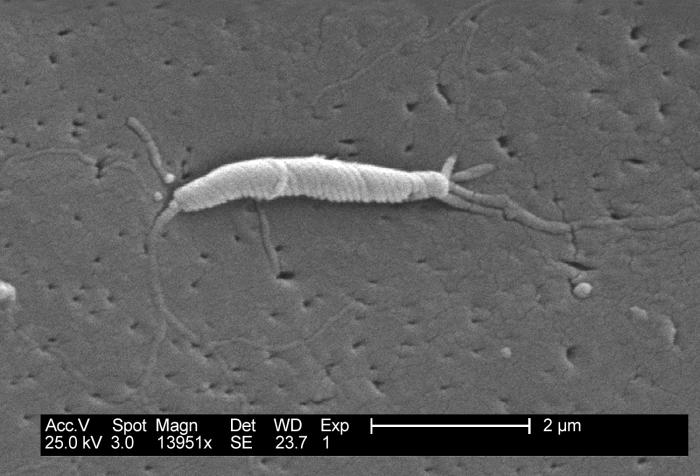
This scanning electron micrograph depicts a Flexispira rappini bacteria, magnified 13,951x.